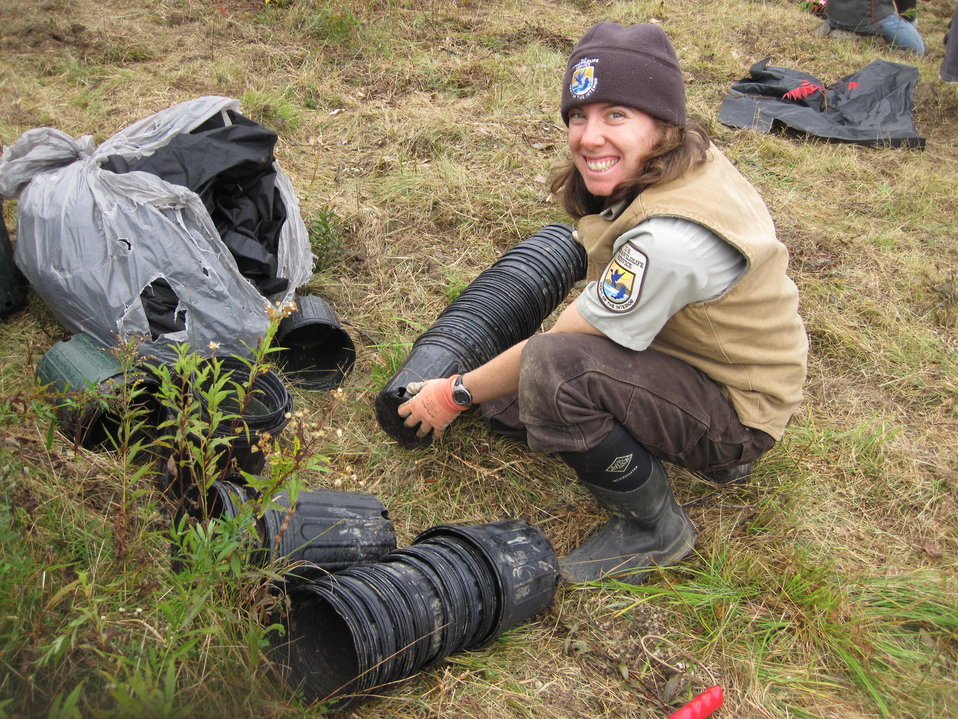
Planting at Rachel Carson National Wildlife Refuge

Credit: Brian Rudinsky/USFWS

www.fws.gov/refuge/rachel carson/